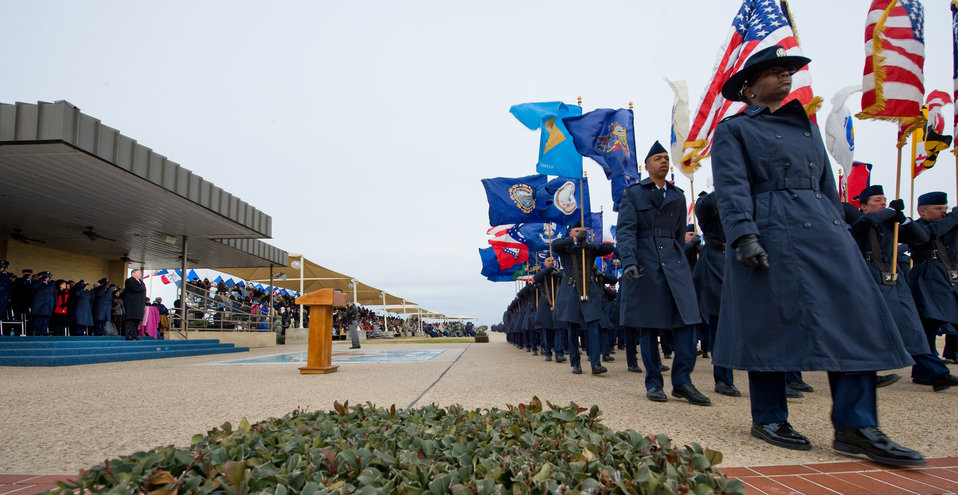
Air Force secretary visits Lackland, addresses priorities

Secretary of the Air Force Michael Donley (top of steps), stands with his hand over his heart as national and state flags are paraded past in review during a Basic Military Training graduation ceremony Jan. 8, 2010, at Lackland Air Force Base, Texas.